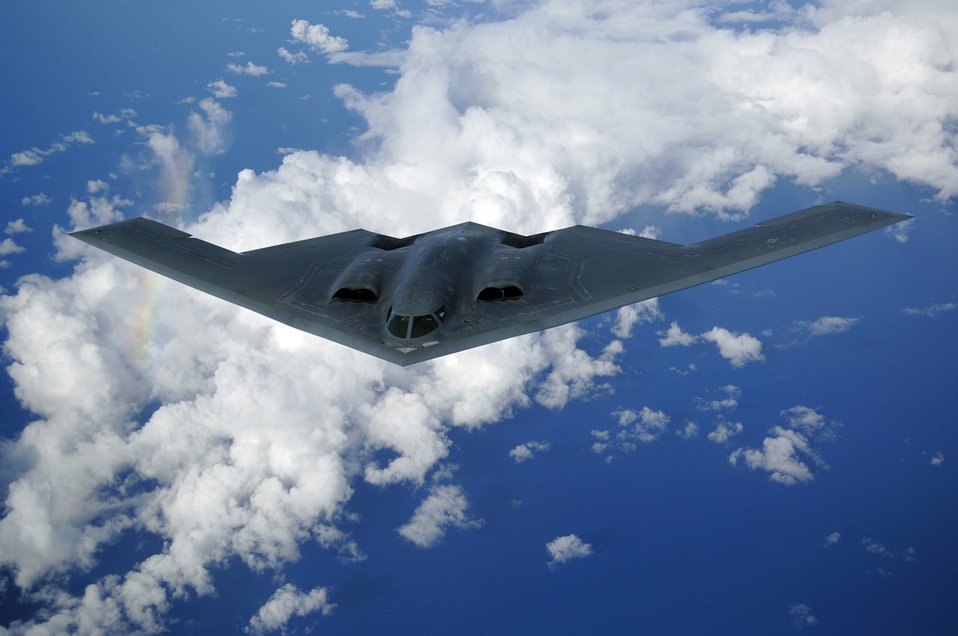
Over the Pacific

A B-2 Spirit soars after a refueling mission over the Pacific Ocean on Tuesday, May 30, 2006. The B-2, from the 509th Bomb Wing at Whiteman Air Force Base, Mo., is part of a continuous bomber presence in the Asia-Pacific region.